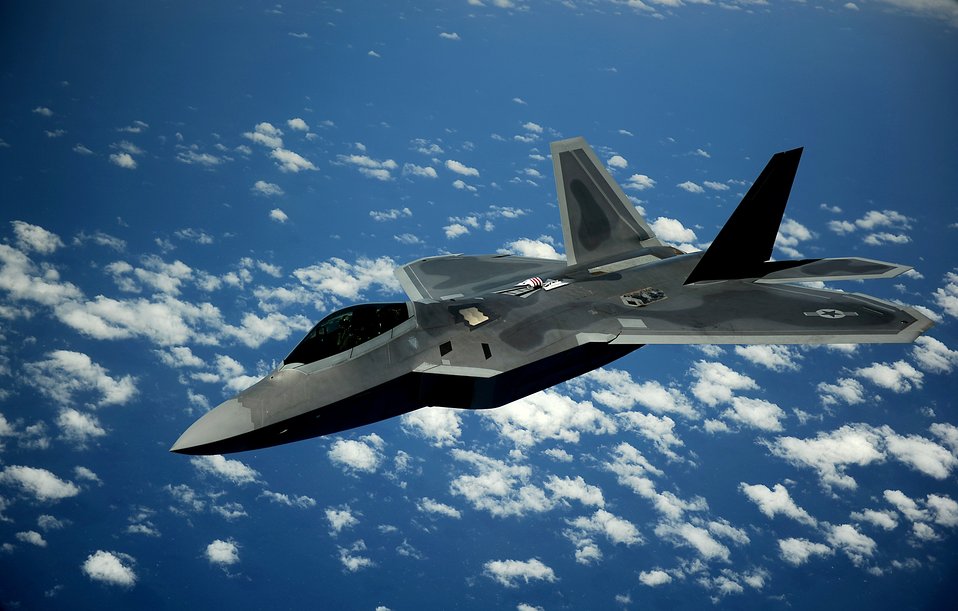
F-22 Raptor

A 1st Fighter Wing's F-22 Raptor from Joint Base Langley-Eustis, Va. pulls away from a KC-135 Stratotanker with the 756th Air Refueling Squadron, Joint Base Andrews Naval Air Facility, Md. after refueling off the east coast on May 10, 2012. The first Raptor assigned to the Wing arrived Jan. 7, 2005. This aircraft was allocated as a trainer, and was docked in a hanger for maintenance personnel to familiarize themselves with its complex systems. The second Raptor, designated for flying operations, arrived Jan. 18, 2005. On Dec. 15, 2005, Air Combat Command commander, along with the 1 FW commander, announced the 27th Fighter Squadron as fully operational capable to fly, fight and win with the F-22. (U.S. Air Force Photo by: Master Sgt. Jeremy Lock)